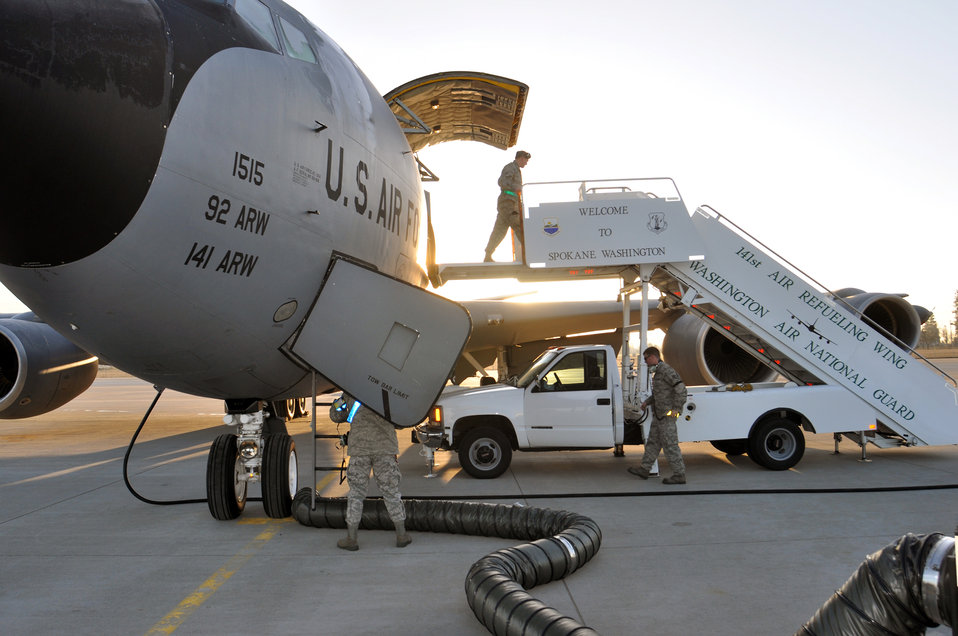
KC-135 crews support global missions

92nd and 141st Air Refueling Wings maintenance crews perform preflight inspections on a KC-135 Stratotanker prior to its take off from Spokane International Airport to support operation Odyssey Dawn March 23, 2011. Tankers will provide fuel to Air Force, Navy and NATO fighter aircraft through out the operation.